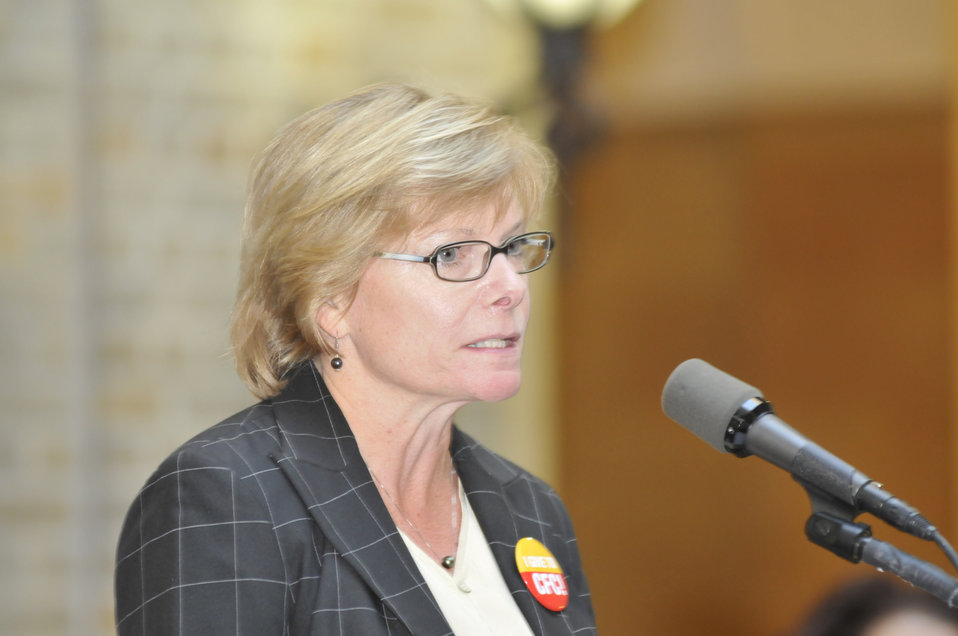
Shannon Hamm 2010 Combined Federal Campaign Chair, makes remarks at the opening ceremonies for the 2010 Combined Federal Campaign held on the Patio of the U.S. Department of Agriculture in Washington, DC, on Tuesday, October 12, 2010. USDA Photo 10di1521-0025 by Bob Nichols.